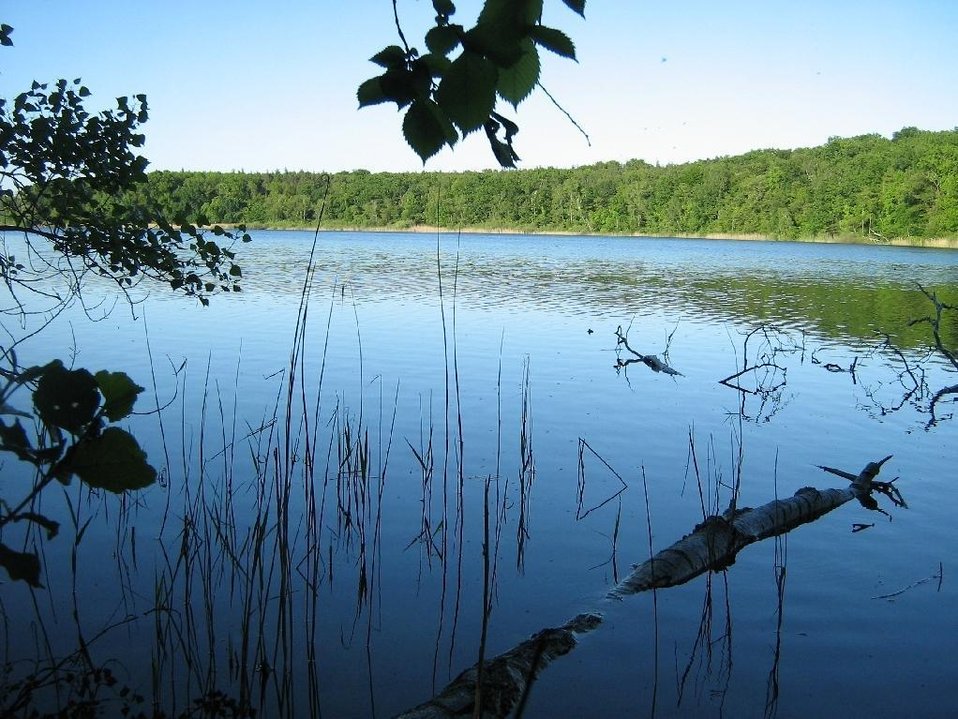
Deutsch: der Sacrower See im Königswald bei Potsdam (Brandenburg).